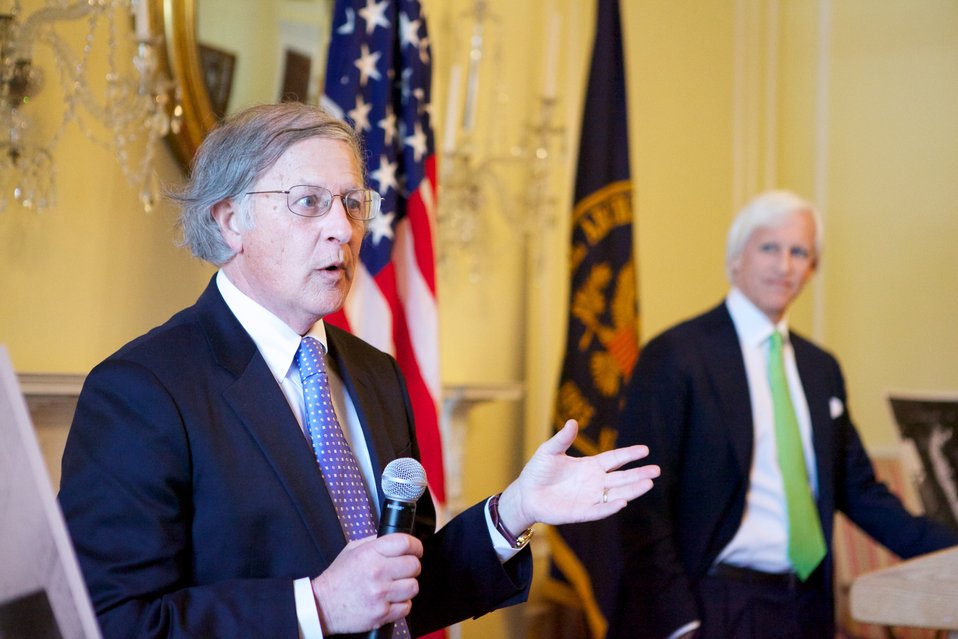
Hitler Album Donation Event